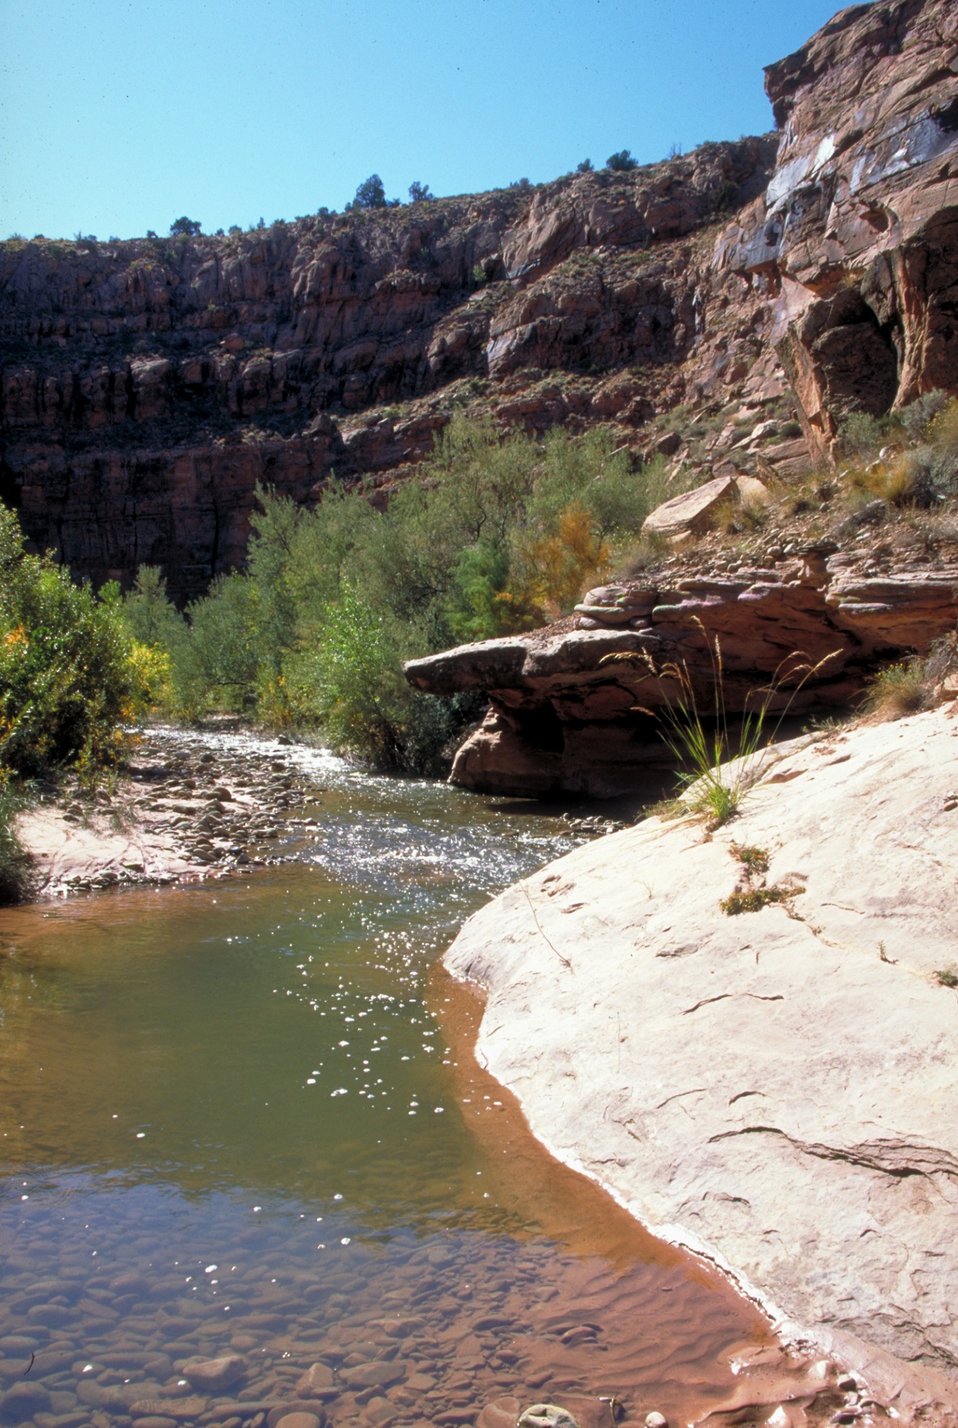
South Fork of Mill Creek near Moab, Utah.